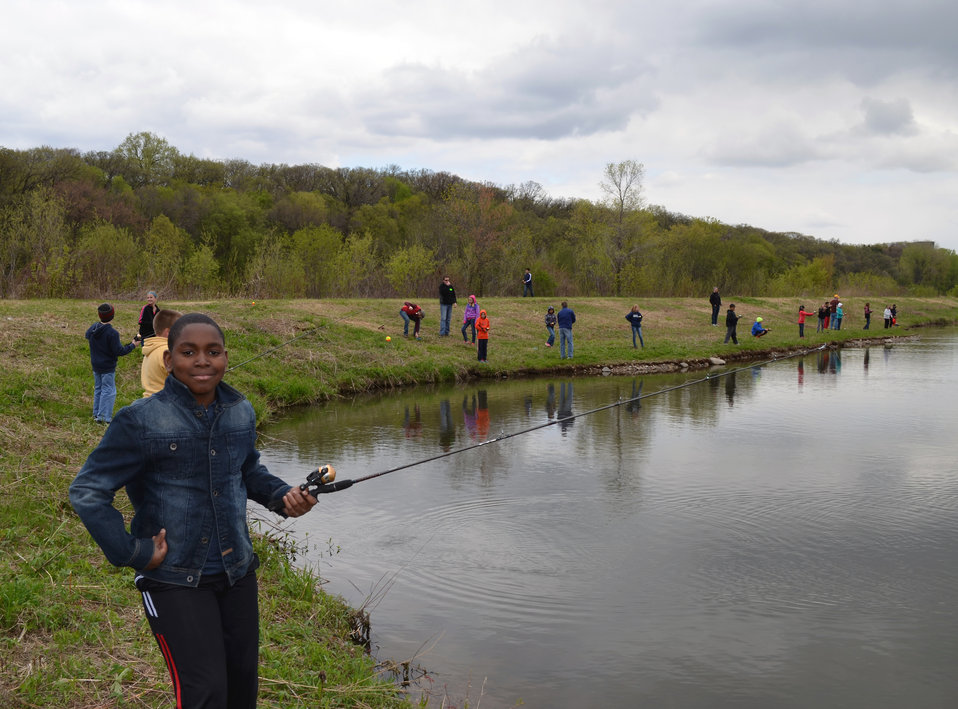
All smiles